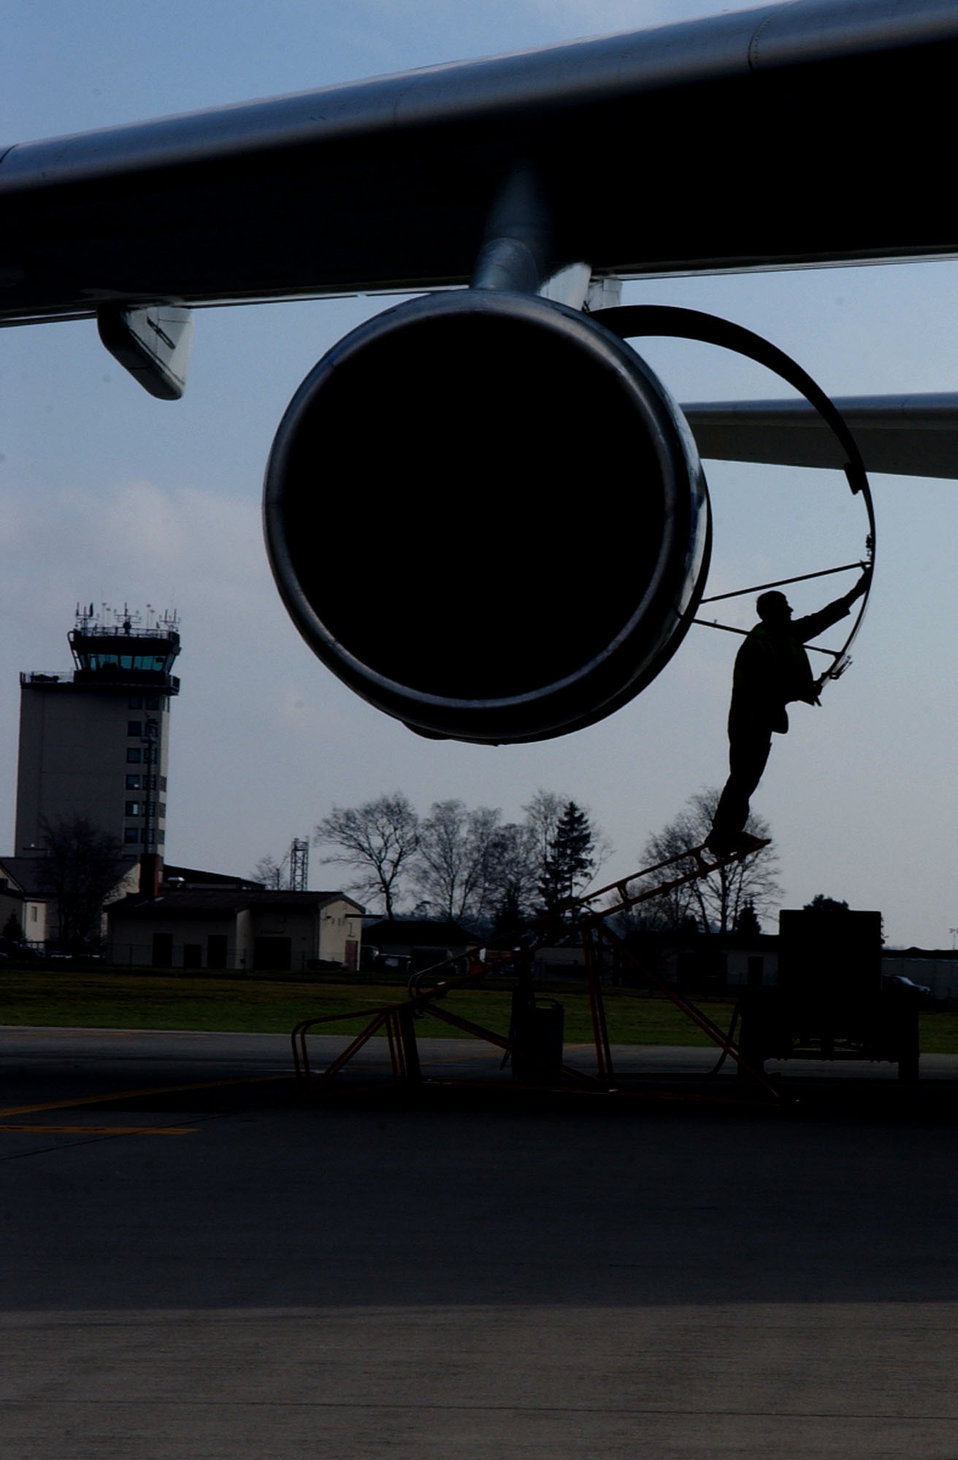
Maintenance on Antonov An-124

An employee of Volga-Dnepr, an airline based in Ulyanovsk, Russia, performs maintenance Feb. 22 on the jet engine of an Antonov An-124 that had landed at Ramstein Air Base, Germany.